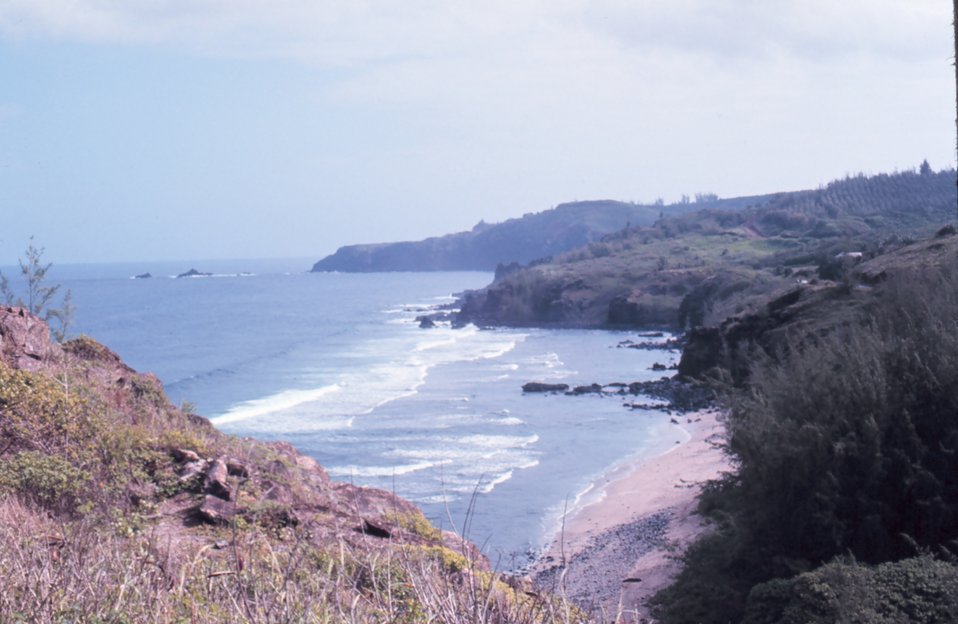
Lanai- Maui trip